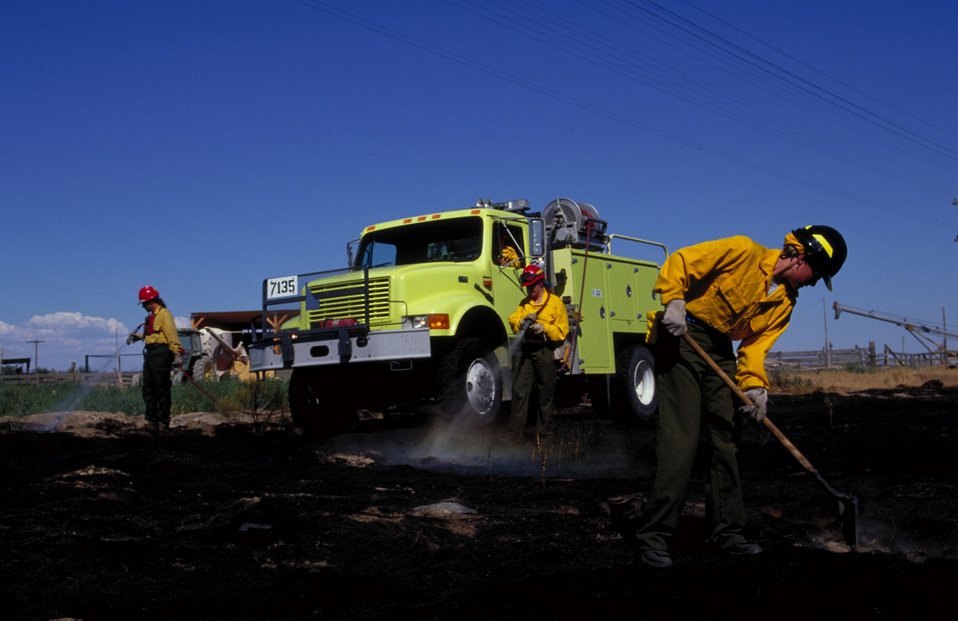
Prescribed burn Fire Season 2000 Lower Snake River District LSRD